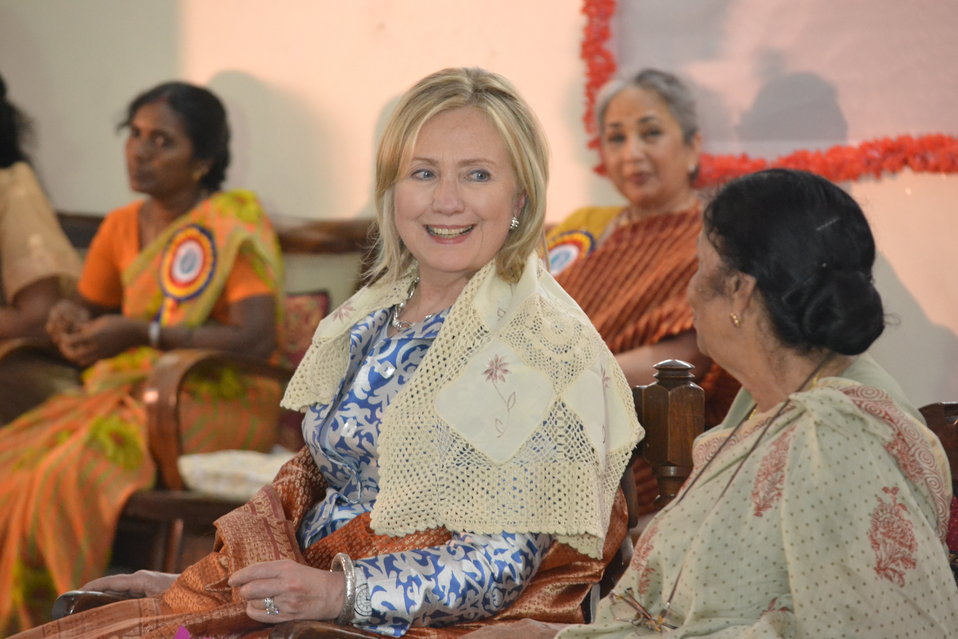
Secretary Clinton and Jaya Arunachalam Chat

U.S. Secretary of State Hillary Rodham Clinton and Working Women’s Forum Founder Jaya Arunachalam chat in Chennai, India, on July 20, 2011. [Paul Cohn/ State Department photo]